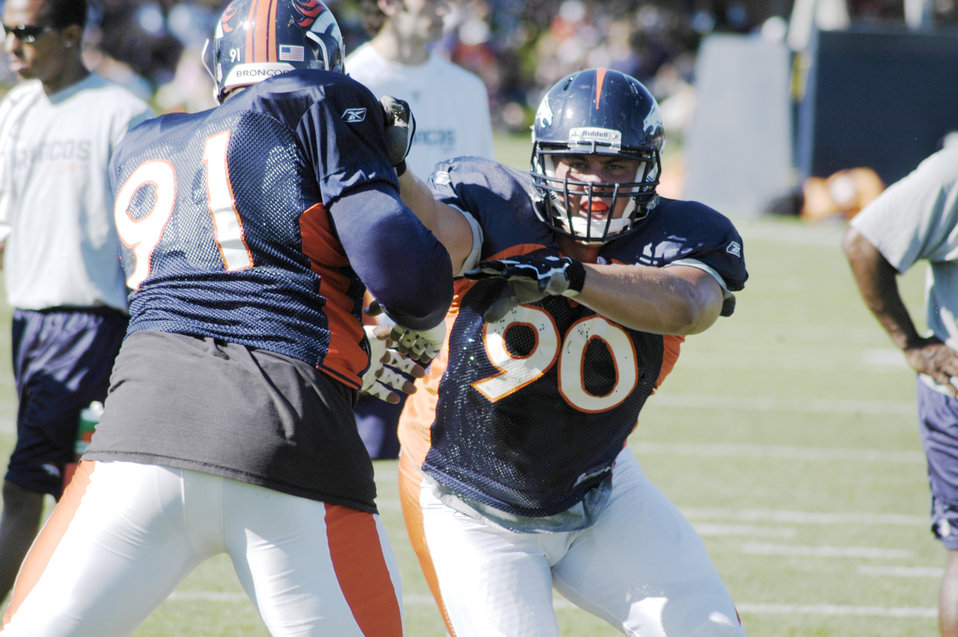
Broncos add 'air power' to defensive line

Air Force Academy 2010 graduate Ben Garland plays on the Denver Broncos' defensive line during leave and days off. He signed with the Broncos as a free agent in April. If signed, he may apply for early release and join the Air National Guard or Air Force Reserve.